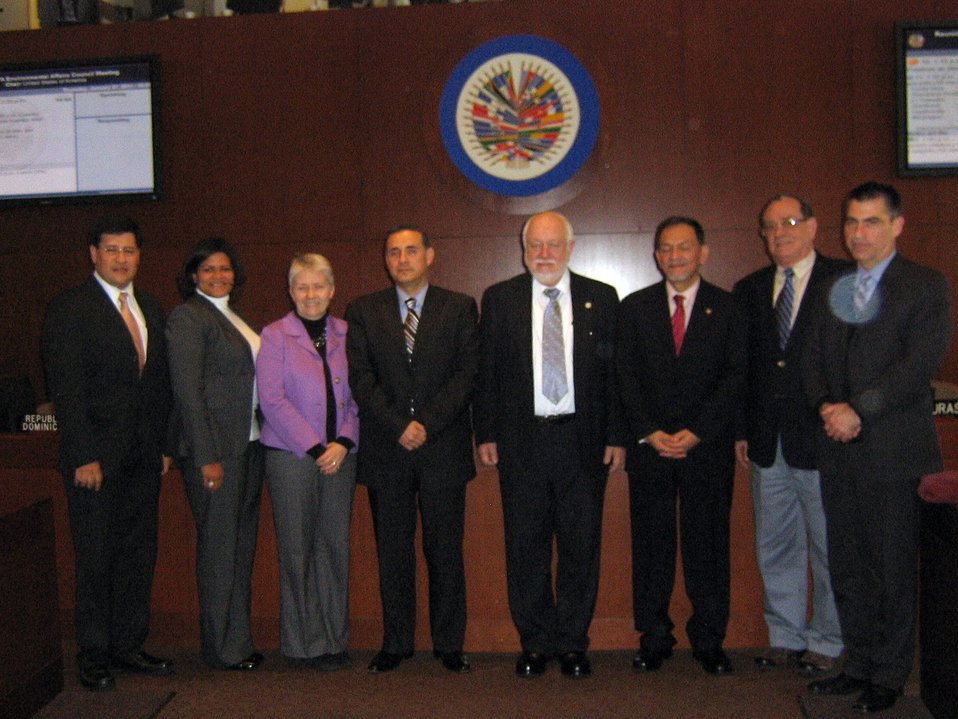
Assistant Secretary Dr. Jones Poses for a Photo

Assistant Secretary of State for Oceans and International Environmental and Scientific Affairs Dr. Kerri-Ann Jones, third from left, poses for a photo the CAFTA-DR Environmental Affairs Council (EAC) meeting in Washington, D.C., on January 27, 2011.